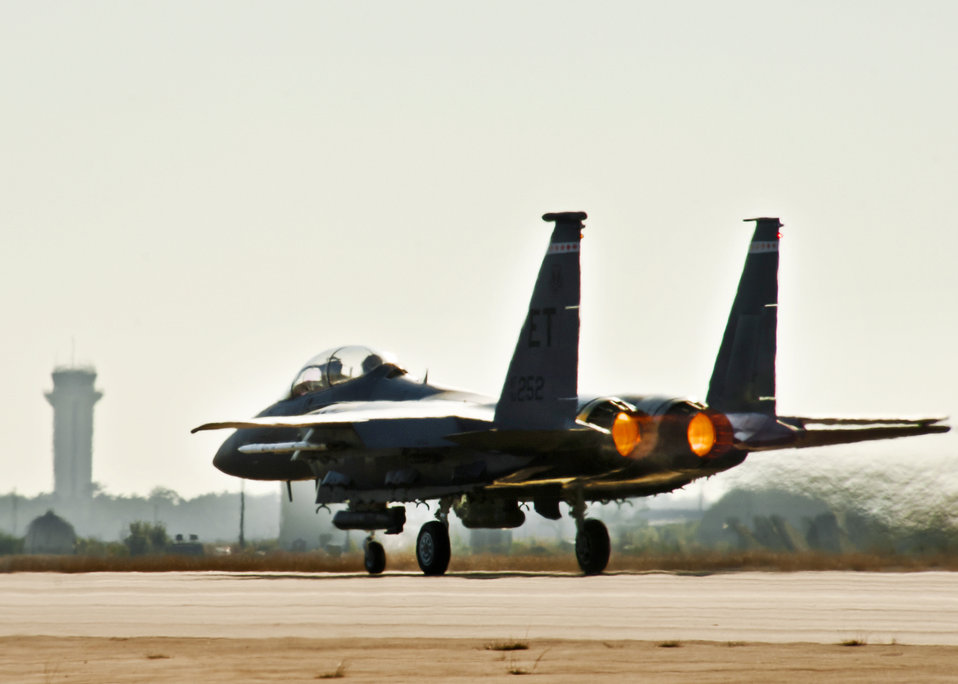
F-15E Strike Eagles get new radar

Afterburners burn bright as F-15E Strike Eagle moves down the runway Jan. 18, 2011, at Eglin Air Force Base, Fla. This F-15E is equipped with the new APG-82 radar, which replaces the 24-year-old APG-70 radar system.